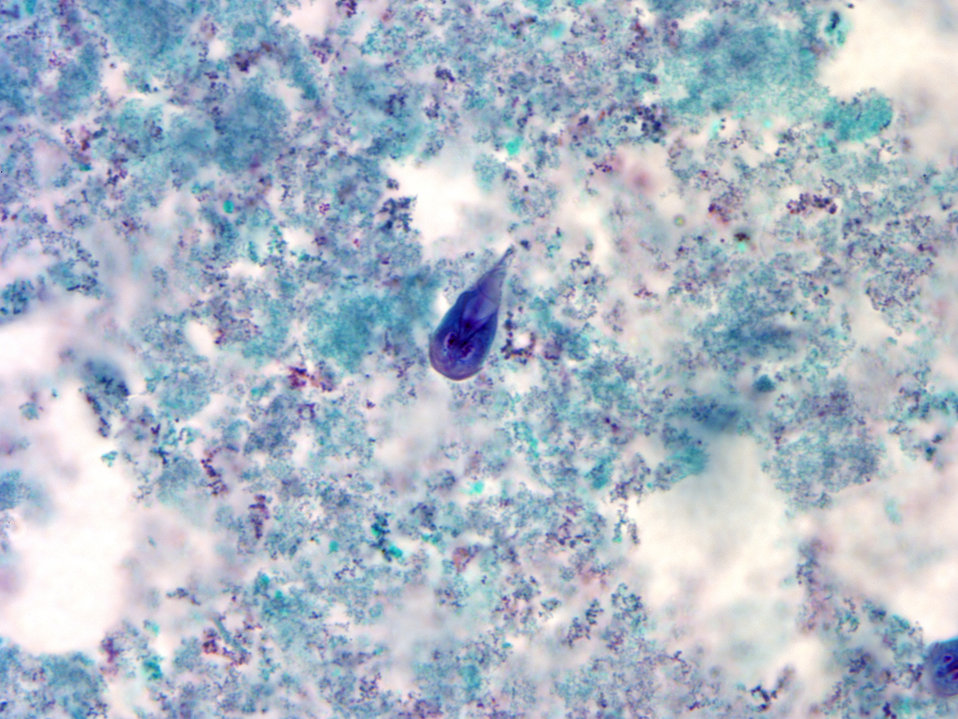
At a magnification of 1000X, this trichrome-stained photomicrograph revealed the morphologic characteristics of a blue-stained Giardia intestinalis protozoan trophozoite (center). In the small intestine, the protozoan cysts release trophozoites, with each cyst producing two trophozoites. Trophozoites multiply by longitudinal binary fission, remaining in the lumen of the proximal small bowel where they can be free, or attached to the mucosa by a ventral sucking disk. As the trophozoites mature, they are simultaneously migrating towards the colon, whereupon, they once again become thick-walled cysts, and are in this way, passed in the host's stool into the environment. As cysts, these protozoan parasites can survive for many months until they are accidentally ingested by another unfortunate host.